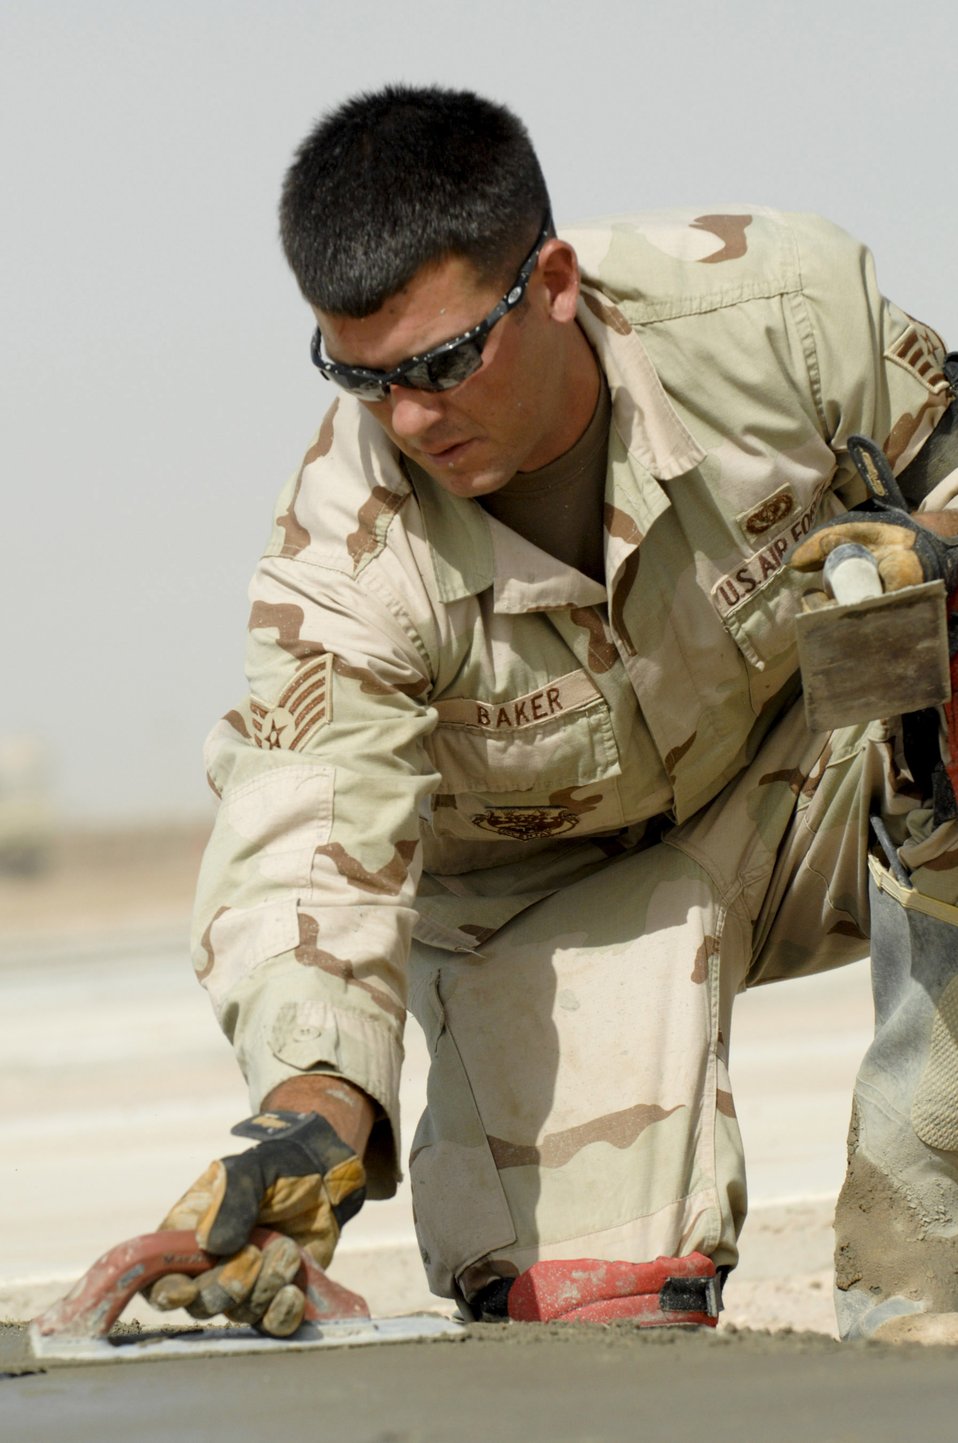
Civil engineers pave the way for Iraqi Army

Staff Sgt. James Baker edges and floats freshly poured cement June 11while his team builds a drill pad at Camp Mittica, Iraq. Sergeant Baker is assigned to the 407th Expeditionary Civil Engineer Squadron at Ali Air Base, Iraq. The team is on the Iraqi base constructing a cement drill pad that will be used by the Iraqi army to train their enlisted soldiers.